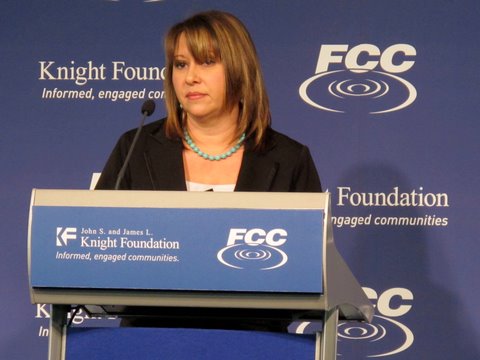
Rhonda Locklear says rural areas of North Carolina need access to broadband internet so her son can compete with children in urban areas.